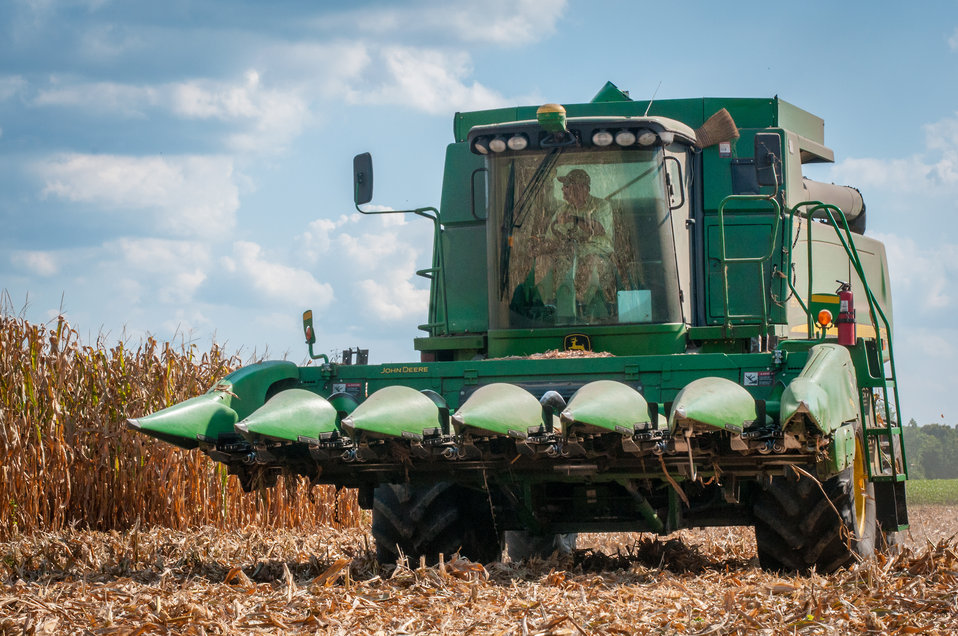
John N. Mills, Jr. operates his six-row corn harvester during the feed corn harvest at the John N. Mills & Sons farm; a family owned business located in the Hanover and King William Counties of Virginia, on Friday, Sept. 20, 2013. Pleasant Level Farm was the original farm from a Land Grant from King George III of England to Nicholas Mills in 1725. The original acreage has never left the Mills family name and continues to be farmed by the family.
Now the farm covers 5,744 acres that produce corn, wheat, soybeans, barley, hay, timber, and pastures a large herd of beef cattle. They have been using conservation and stewardship practices since the 1960s. Some of the efficient practices include no-till planting and cover crops to reduce soil erosion and prevent the leaching of nutrients into ground water, as well as livestock stream exclusion. The farm has several conservation easements that aids in the preservation and restoration of wetlands and waterways. For information about the U.S. Department of Agriculture (USDA), please go to www.usda.gov.